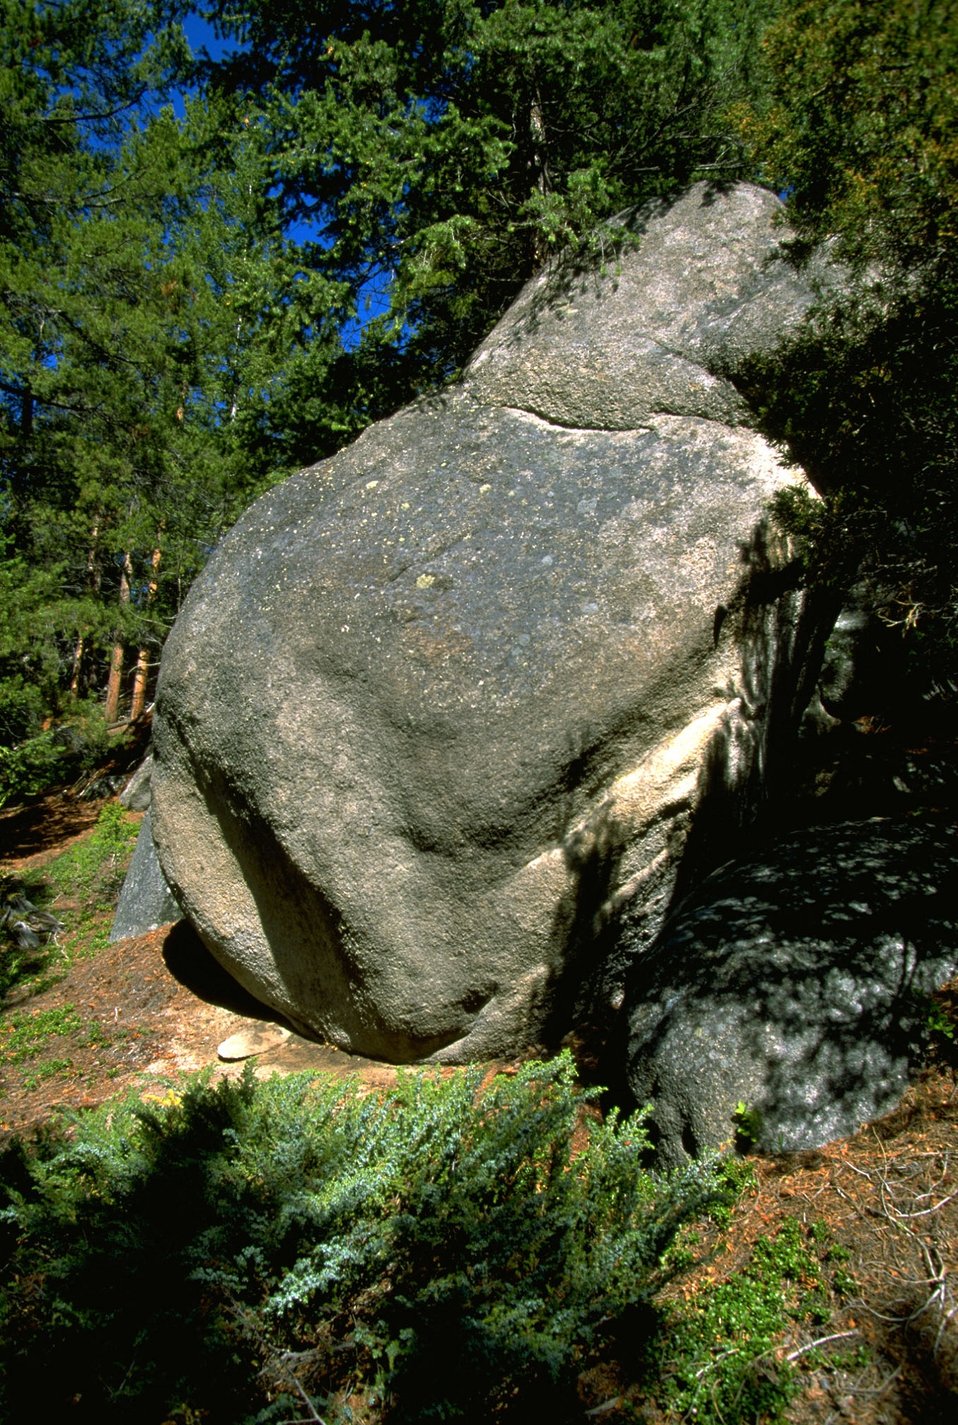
Large rock formation